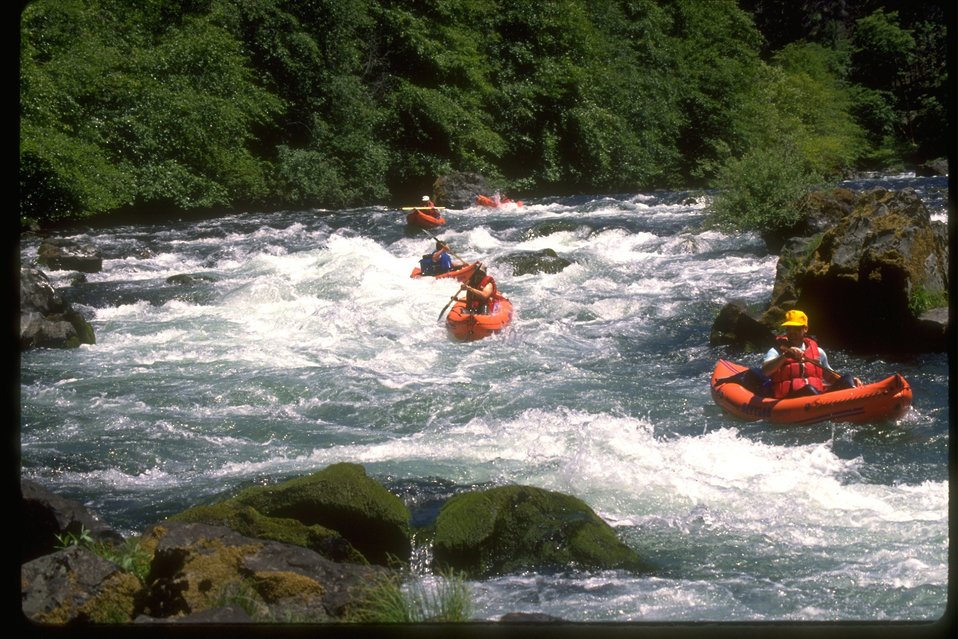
Rafting on the North Umpqua River.